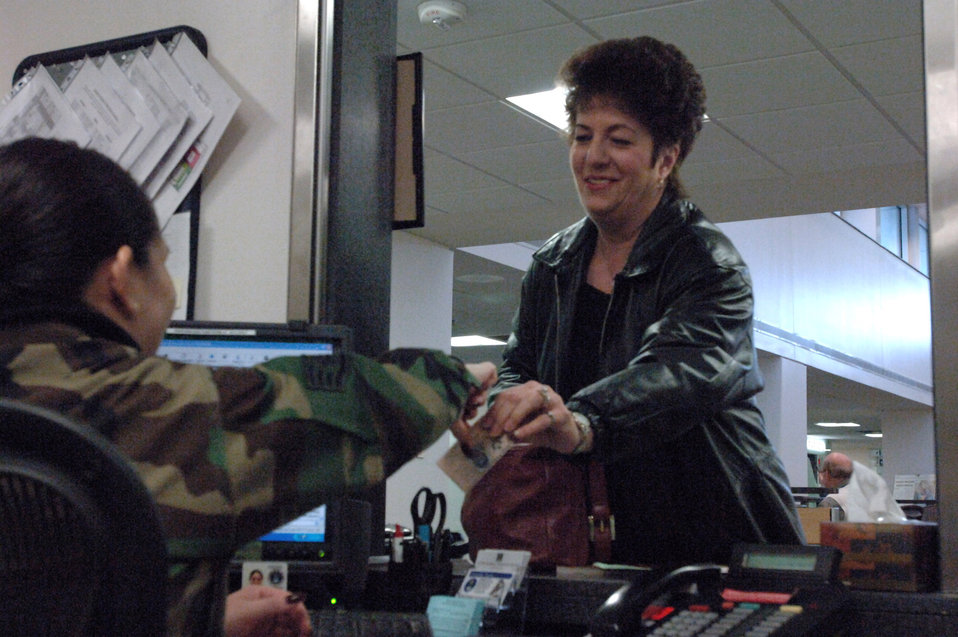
Academy hospital tops in class

Staff Sgt. Dana Reyes checks Karin Hartman in Feb. 6 for her morning appointment at the Air Force Academy hospital. The Academy hospital was awarded the Defense Department's Medical Treatment Facility Patient Satisfaction Award for fiscal year 2006. Sergeant Reyes is a family practice technician with the 10th Medical Group.